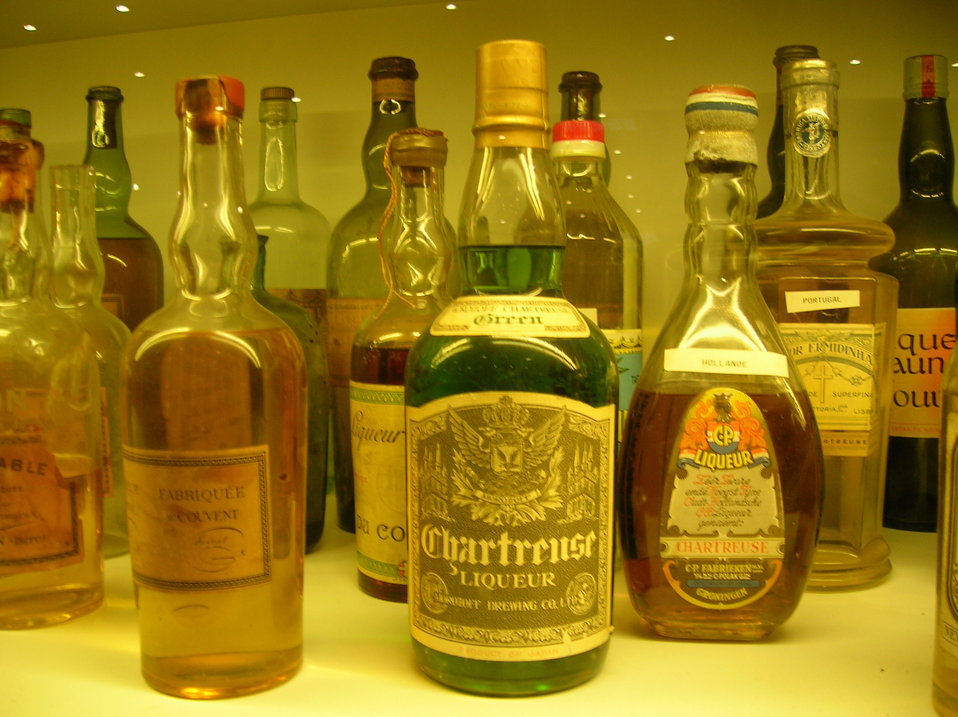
Counterfeits of Chartreuse liquors. Fran√ßais†: Contrefa√ßons de liqueur de Chartreuse.